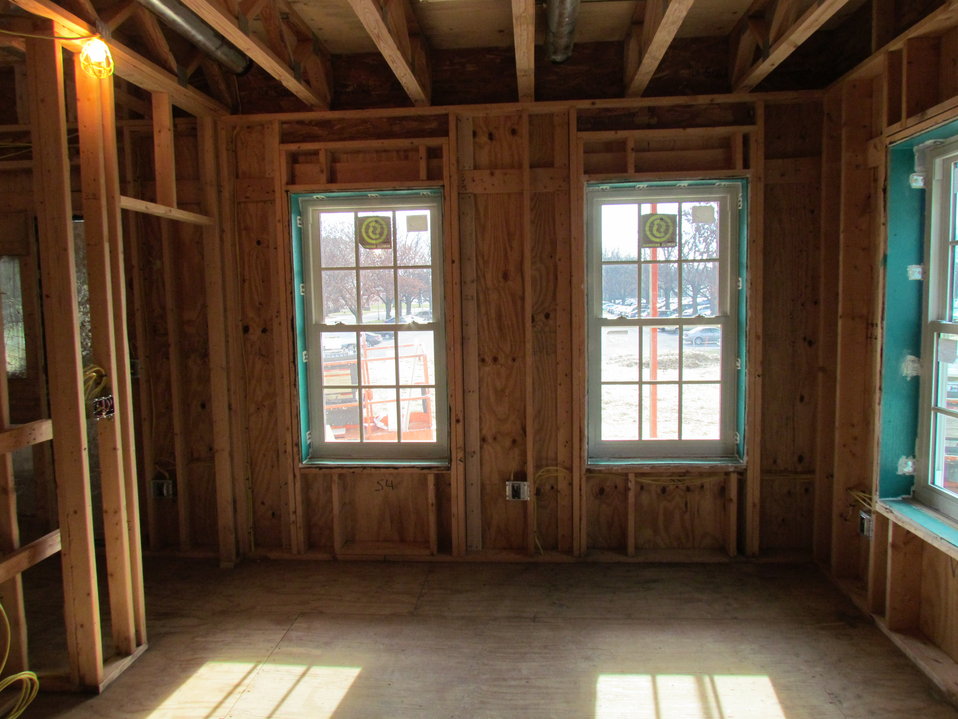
Net-Zero Energy Residential Test Facility – Photo taken looking through windows of the study on the first floor.